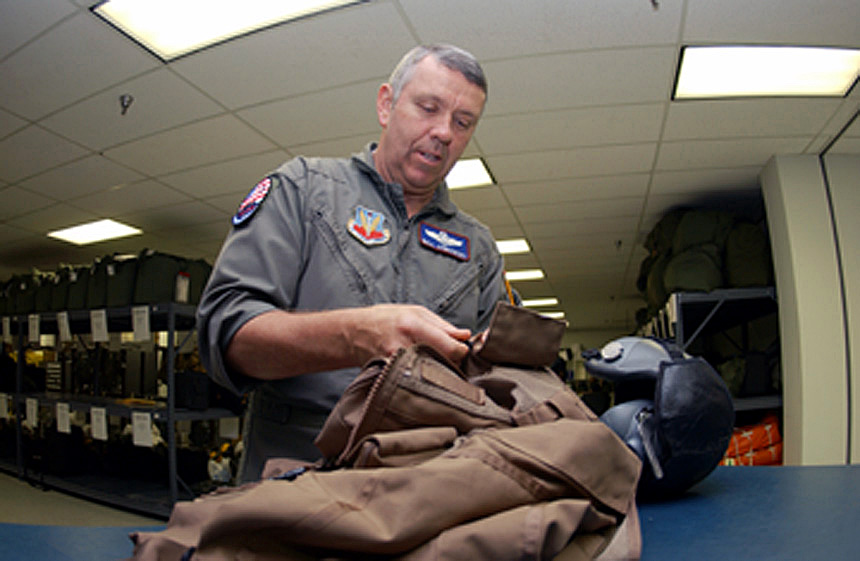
Jankowski

OPERATION IRAQI FREEDOM -- Lt. Col. Bill Jankowski, a Vietnam conflict veteran and a 40th Expeditionary Bomb Squadron B-52 pilot prepares for a mission here. Jankowski has 33 years of Air Force experience.